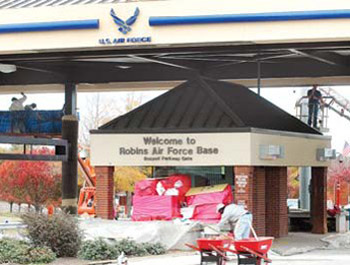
Loadmasters on call

SOUTHWEST ASIA (AFPN) -- Senior Airman Bryan Paul winds up his communications cable after offloading cargo from a C-130 Hercules. Airman Paul is one of 110 loadmasters here supporting Operation Iraqi Freedom. He is with the 386th Air Expeditionary Wing.